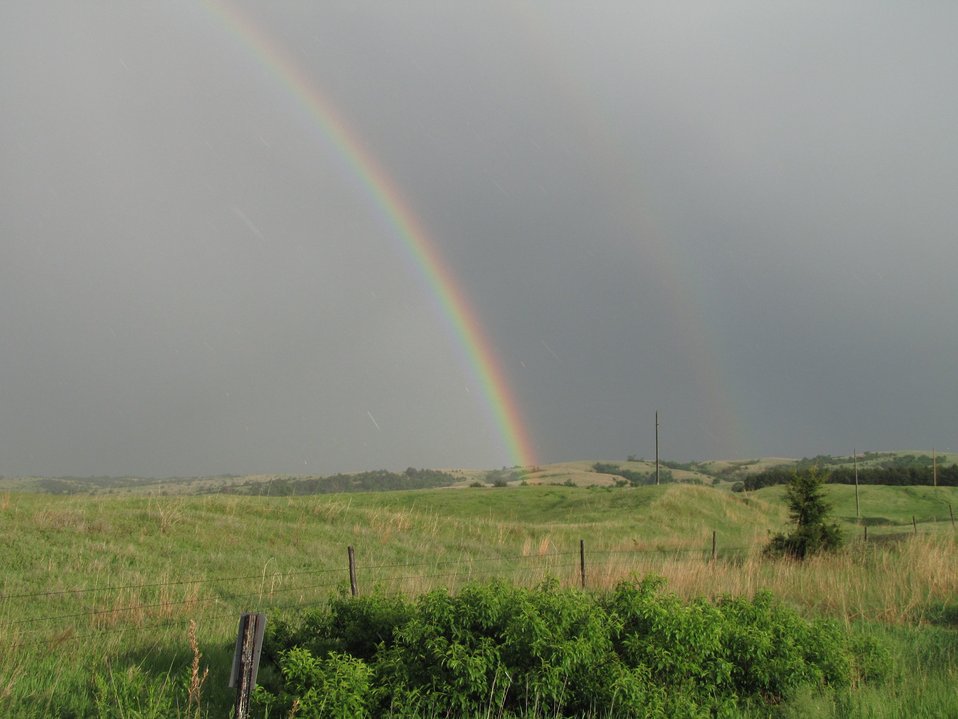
Rainbow following storm passage